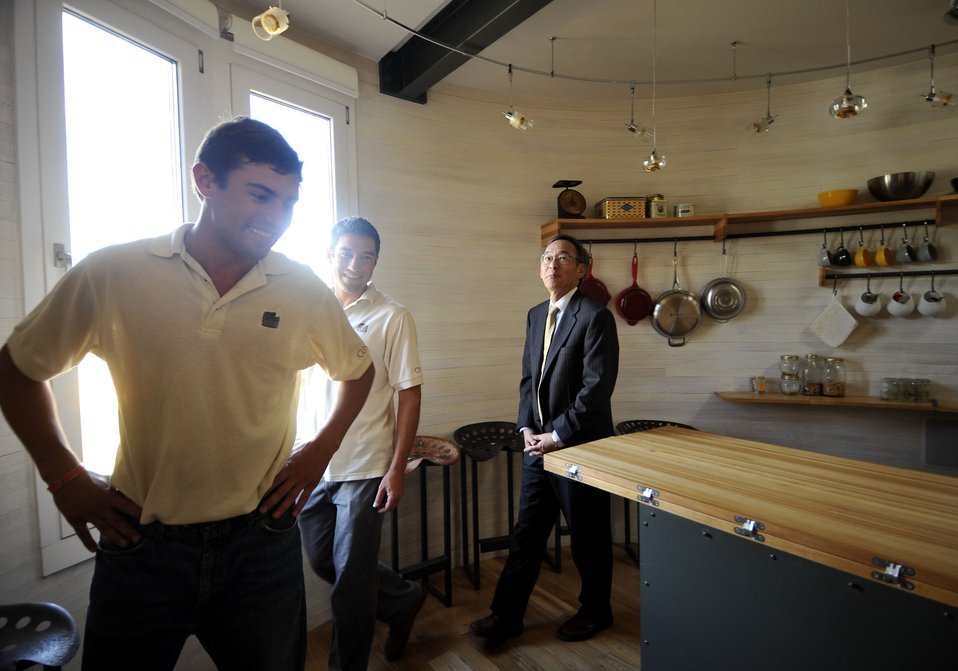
Solar Decathlon 2009 on the National Mall, with Sec. Chu

Solar Decathlon 09